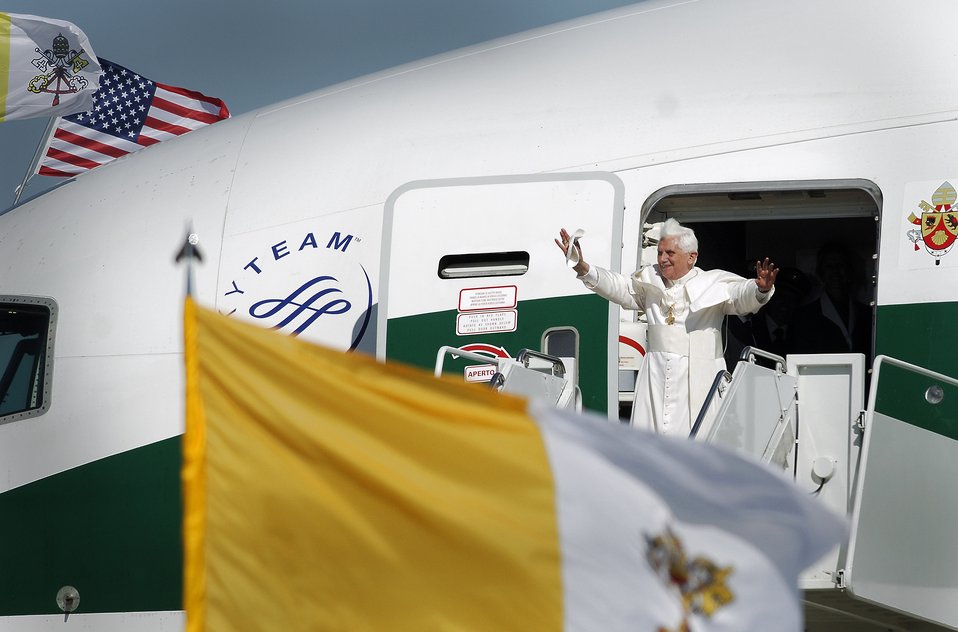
Pope arrives at Andrews

Pope Benedict XVI waves to the crowd upon his arrival April 15 at Andrews Air Force Base, Md. The pope is visiting the United States for a week and will meet with President George W. Bush at the White House, address the presidents of Roman Catholic colleges and universities, and celebrate Mass at Nationals Park in Washington, D.C., and Yankee Stadium in New York City. The pontiff was selected as the 265th pope on April 19, 2005.